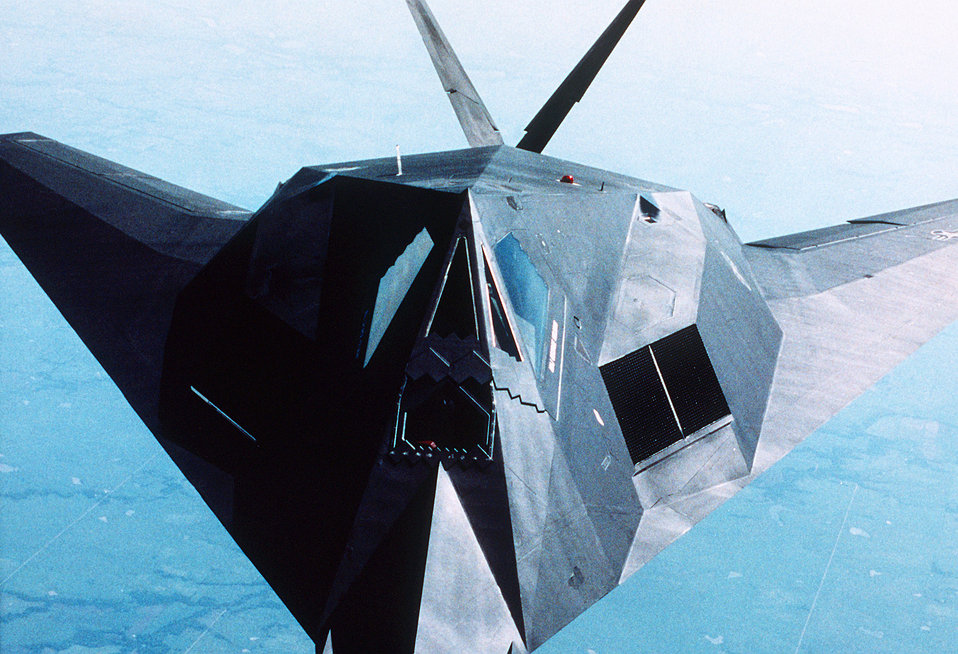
F-117A

1990's -- An F-117A aircraft from the 37th Tactical Fighter Wing moves in for a midair refueling during Operation Desert Shield.